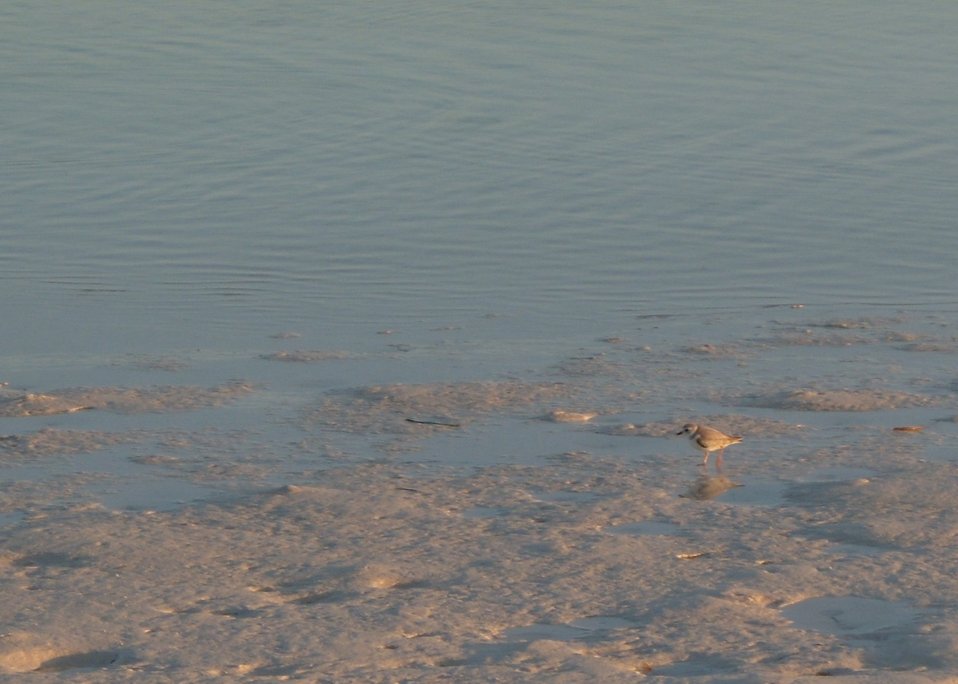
Piping plover on Great Inagua Island